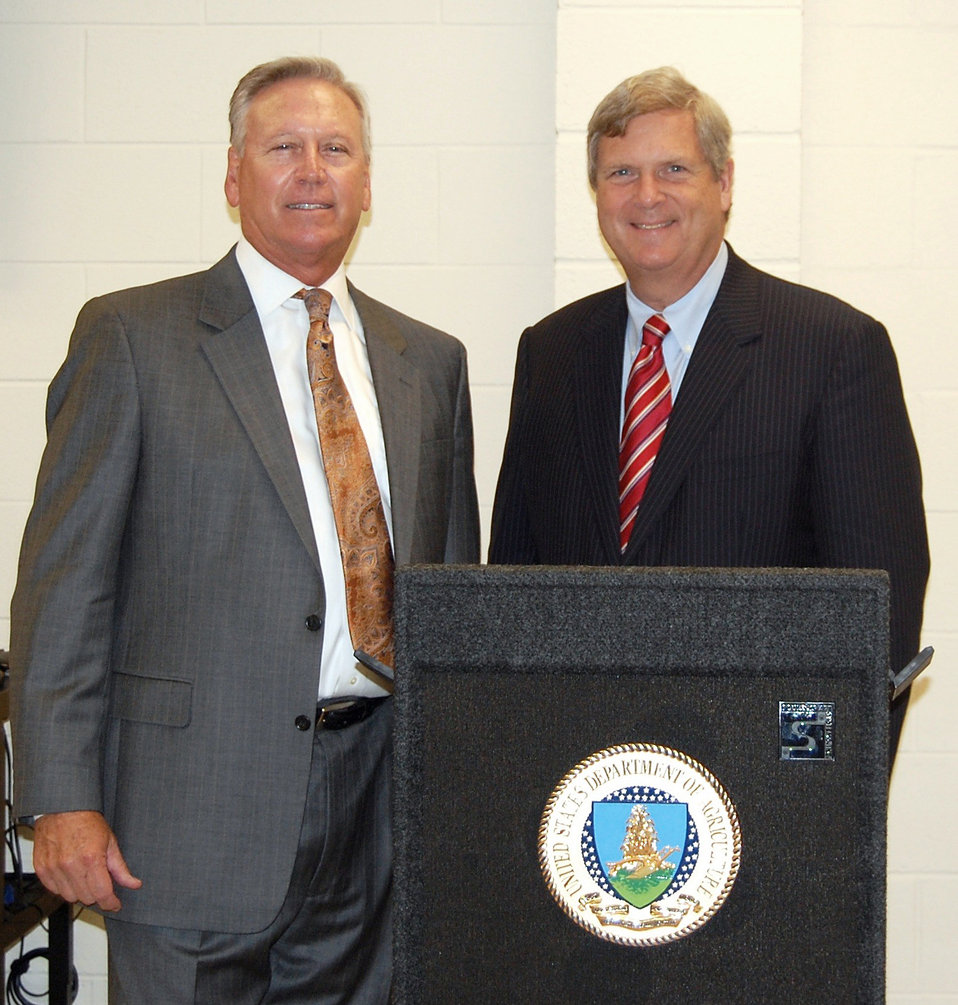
General Manager Piedmont Electric Membership Corporation (EMC) Randy Brecheisen (left) with Agriculture Secretary Tom Vilsack (right) at Piedmont EMC in Hillsborough, NC., on Friday, Sept. 7, 2012. Piedmont EMC received a guaranteed loan from the U.S. Department of Agriculture (USDA) to extend its system by 52 miles and to help provide service to about 1,000 new member consumers. The cooperative will also increase capacity for 100 current consumers and improve the reliability of about 40 miles of line.